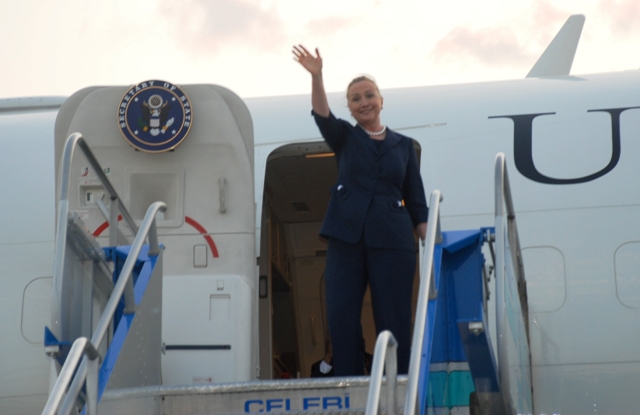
Secretary Clinton Waves Before Departing Istanbul

U.S. Secretary of State Hillary Rodham Clinton waves before departing Istanbul, Turkey, on August 11, 2012.